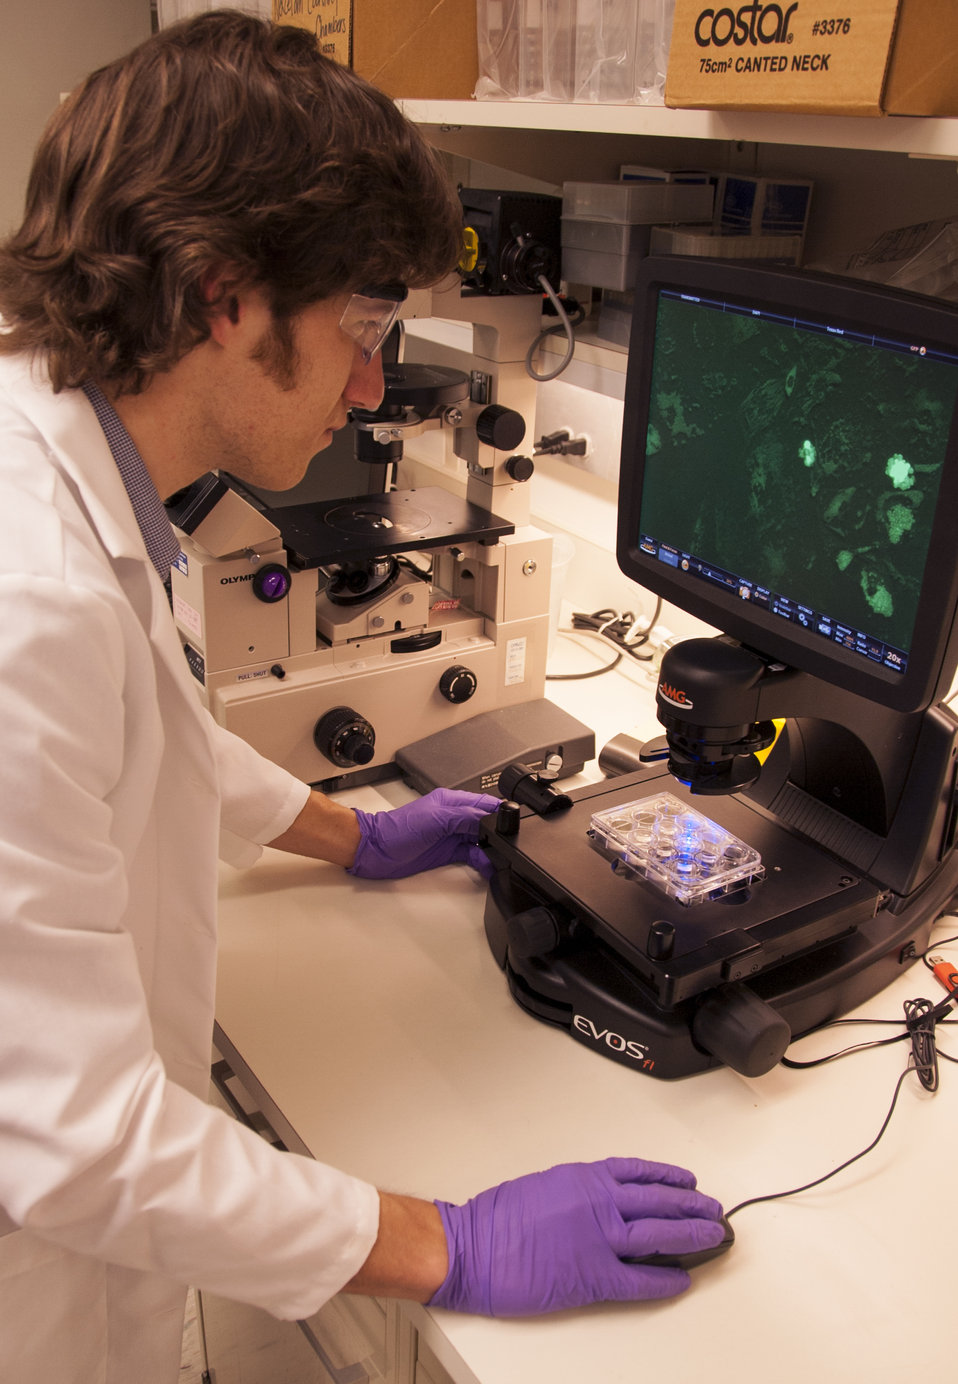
Stem Cell Research (0394)

Ross Marklein, Ph.D., a post-doctoral research fellow at FDA, examines images of stem cells in an FDA laboratory on the National Institutes of Health campus in Bethesda, Md.

To learn more about stem cell research, read this FDA Consumer Update:

Adult Stem Cell Research Shows Promise

This photo is free of all copyright restrictions and available for use and redistribution without permission. Credit to the U.S. Food and Drug Administration is appreciated but not required.

Privacy and use information: www.flickr.com/people/fdaphotos/